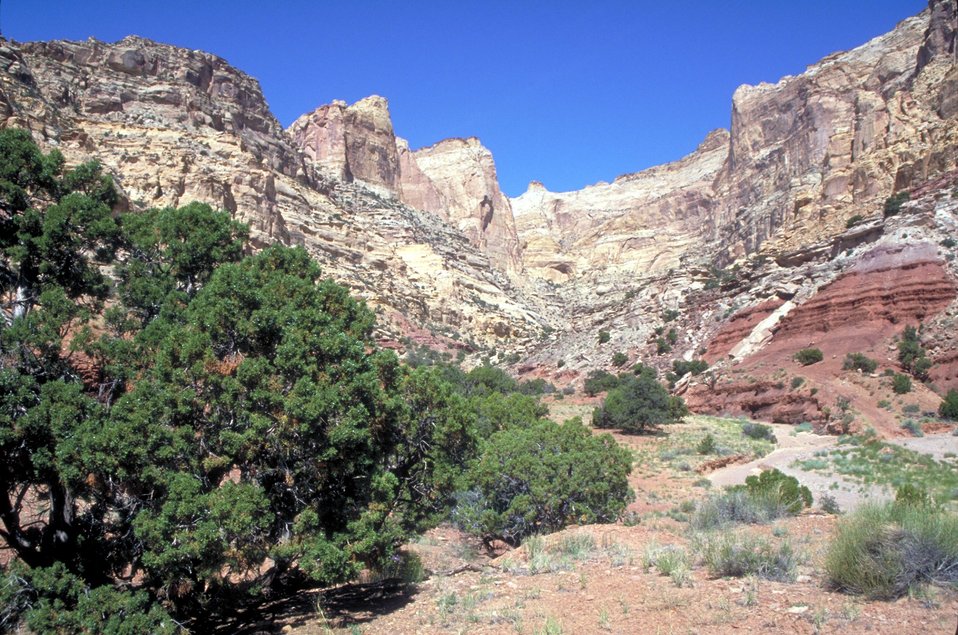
Red Canyon Loop, San Rafael Swell.